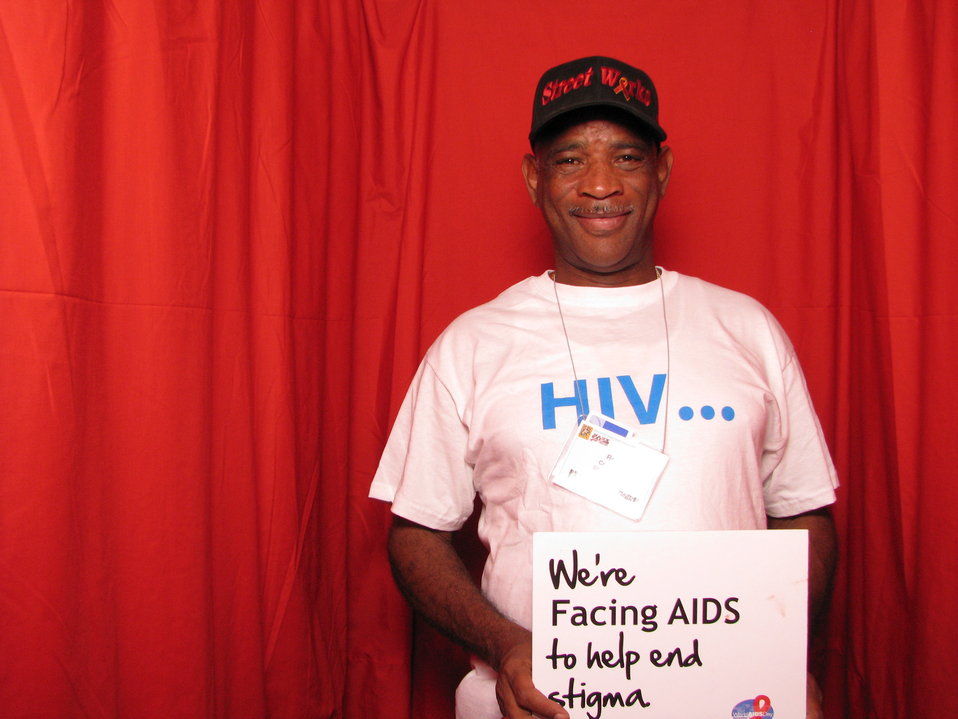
We're FACING AIDS to help end stigma.

From the AIDS.gov photo booth at the U.S. Conference on AIDS, September 2010 (Orlando, FL).